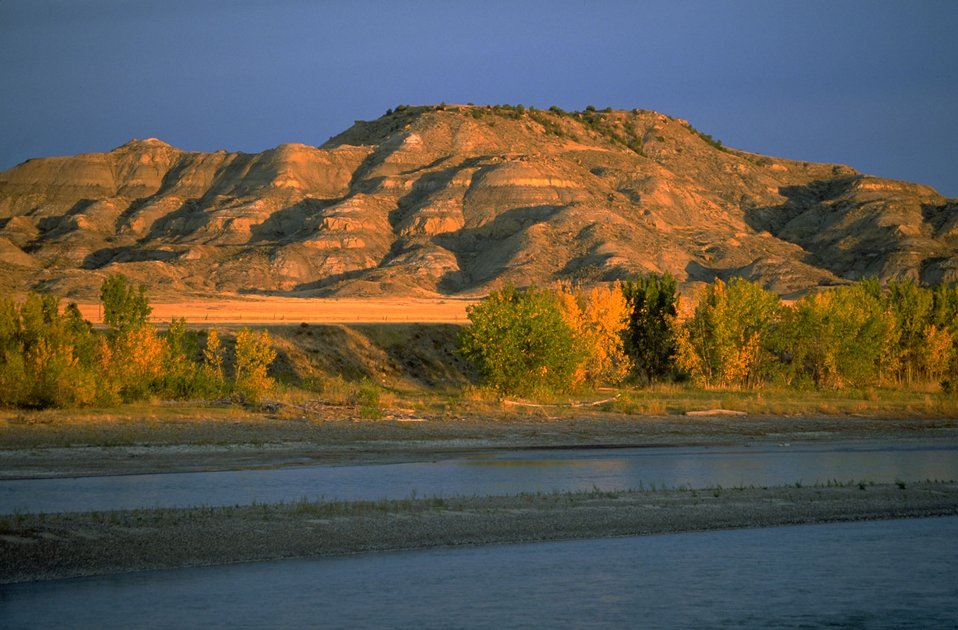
Late afternoon sun shining on cottonwoods and Sheridan Butte, along the Yellowstone River